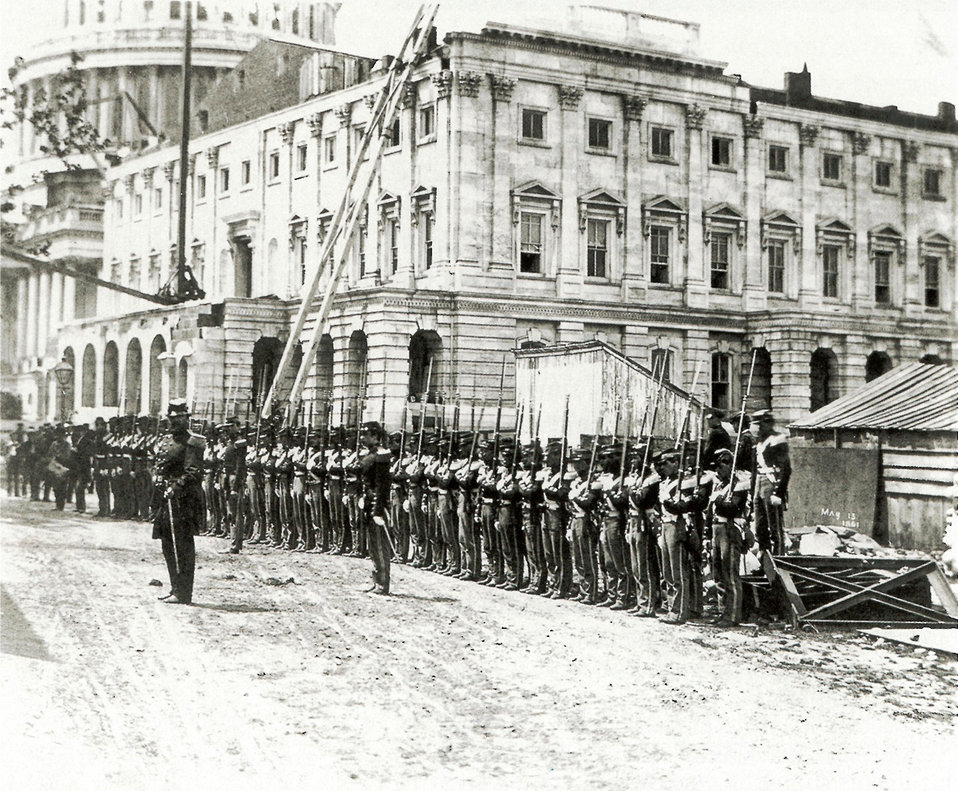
Troops at the U.S. Capitol

May 13, 1861